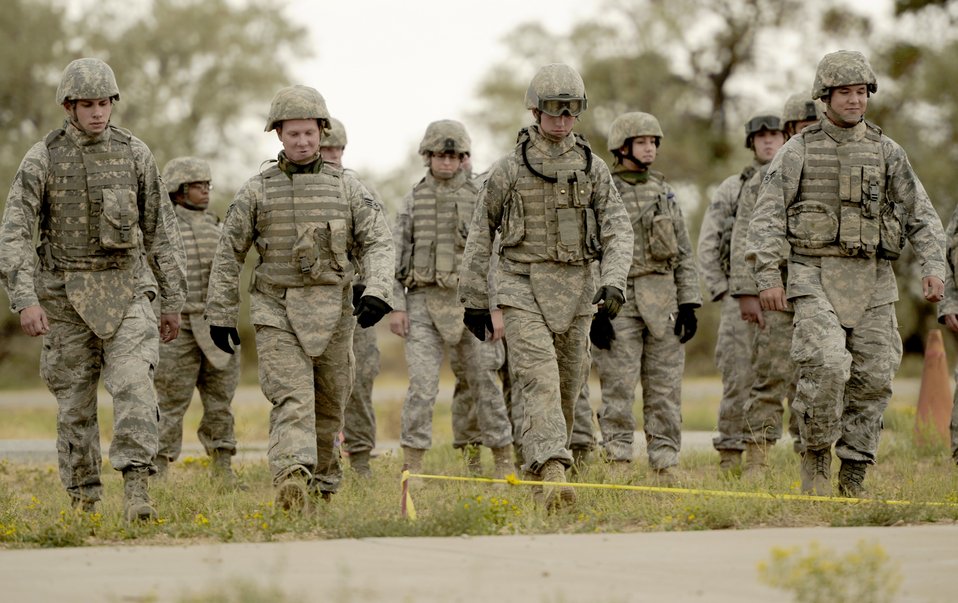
Combat Readiness Training

Airmen participate in land navigation drills during the 75th Security Forces Combat Readiness Training course Sept. 22, 2010, at Hill Air Force Base, Utah. The course teaches Airmen basic tactical movements, land navigation and self aid buddy care.